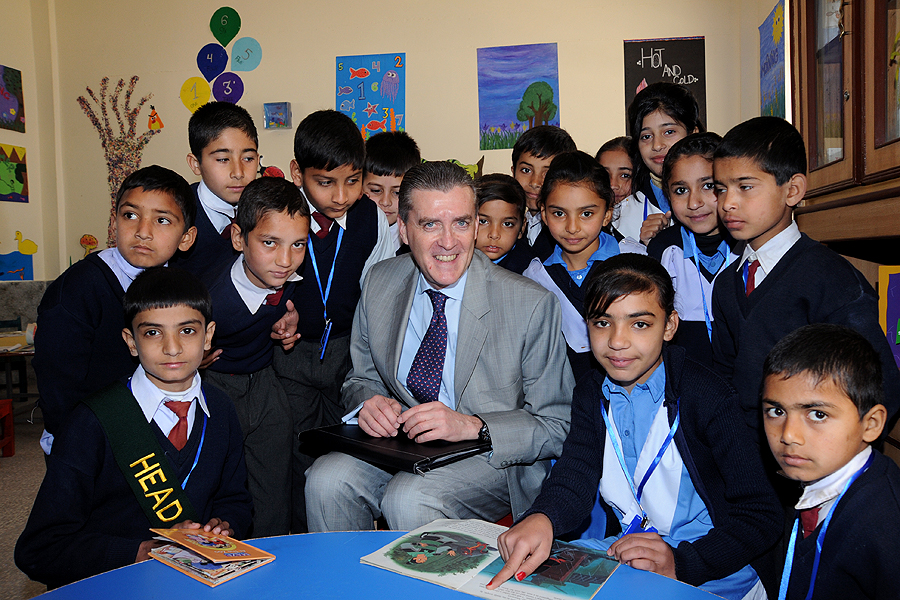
United States and Pakistan Launch the Pakistan Reading Project